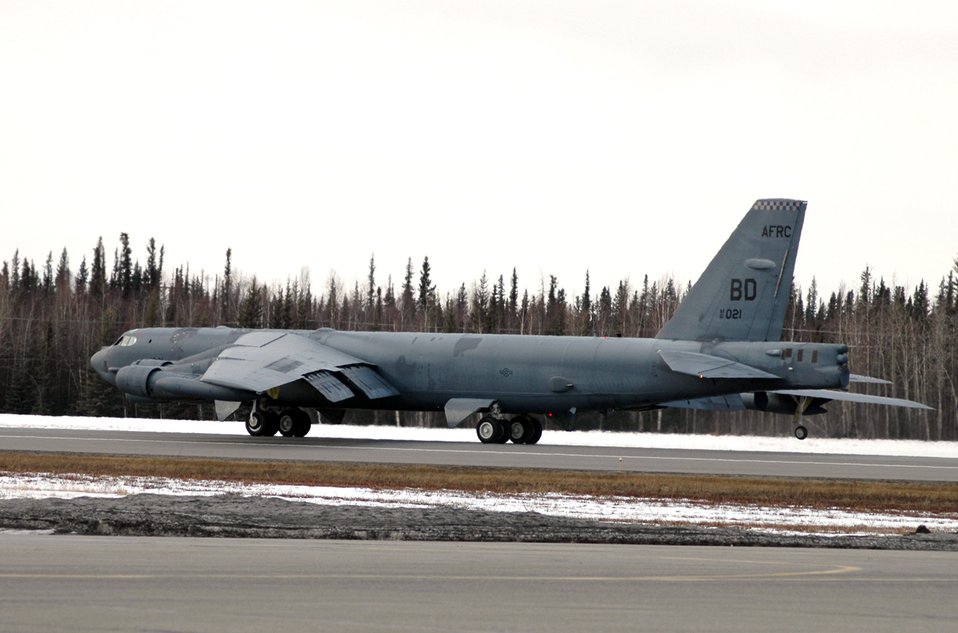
Aggressors vs. friendlies

An Air Force Reserve crew lands a B-52 Stratofortress at Eielson Air Force Base, Alaska, after a familiarization flight in preparation for Red Flag-Alaska 06-2. The exercise, previously called Cope Thunder, focuses on joint offensive counter-air, interdiction, close-air support and large-force employment training. The aircraft is from the 93rd Bomb Squadron at Barksdale AFB, La.